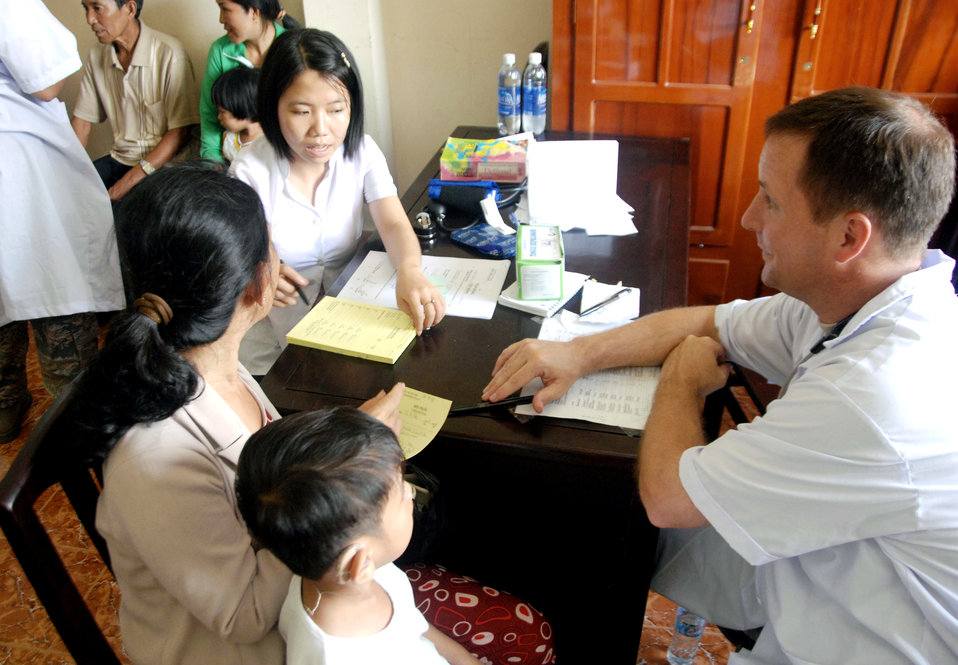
Pacific Angel 2010

Lt. Col. Gerald Delk (right) and Nha Nguyen ask two Vietnamese patients medical-related questions during a visit to the family practice clinic May 14, 2010, in Truong Thanh, Vietnam. More than 50 U.S. servicemembers are in Vietnam working alongside the Vietnamese military, non-governmental organizations and civil health and engineering members in humanitarian medical and engineering efforts. Colonel Delk is from the 920th Aeromedical Staging Squadron at Patrick Air Force Base, Fla.